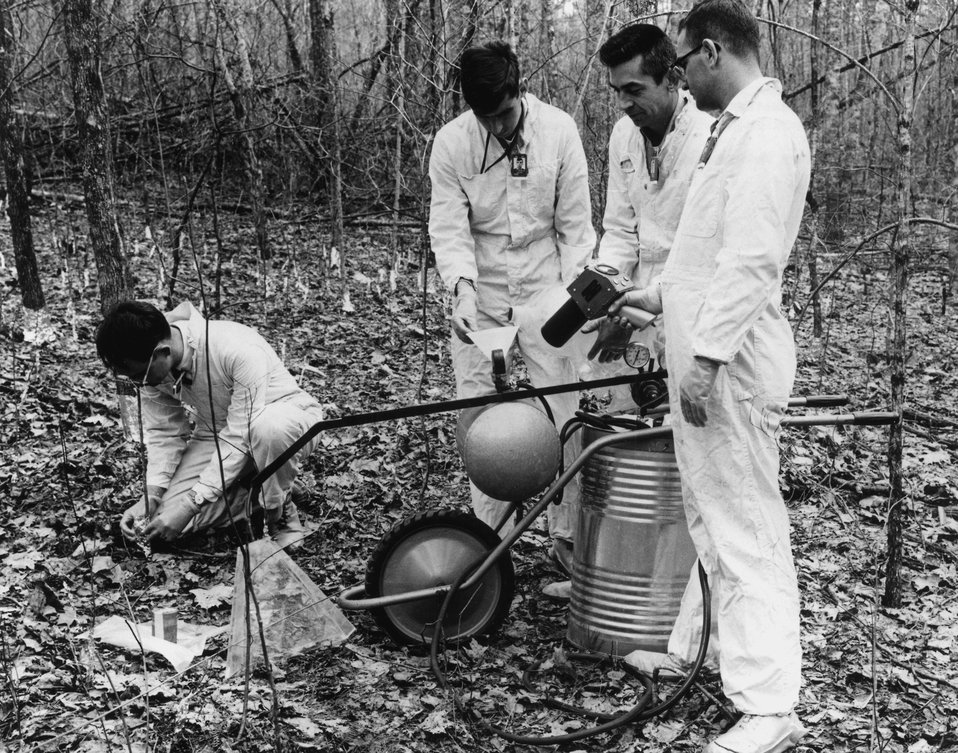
Oak Ridge National Laboratory plant ecologists tag experimental forest plots with radioactive cesium for a long-term study of the nuclide in terrestrial environments. c. 1967